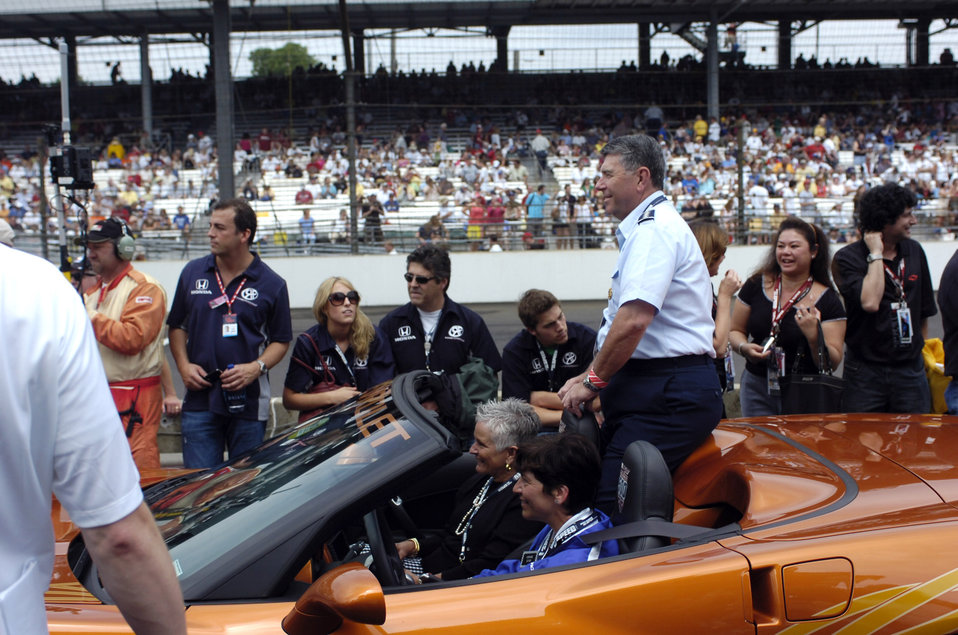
Gentlemen, start your engines!

Gen. Paul V. Hester takes a lap in one of the Indianapolis 500 official pace cars during pre-race activities May 27 in Indianapolis. The Chevrolet Corvette convertible was the official pace car of the 91st Indianapolis 500. General Hester is commander of Pacific Air Forces.